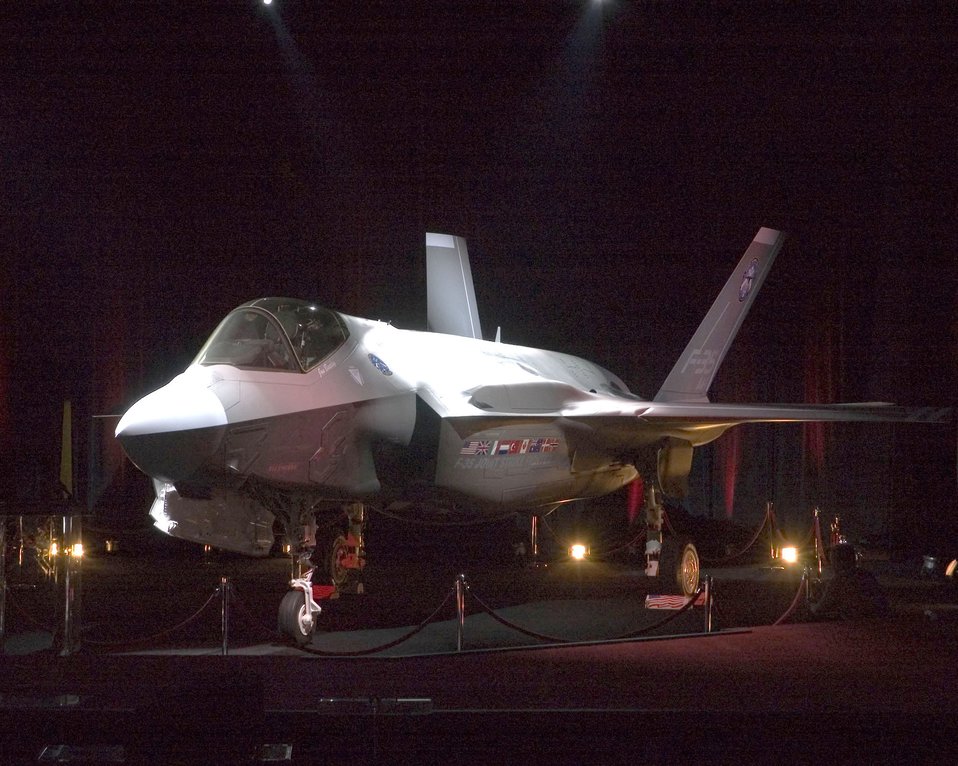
F-35 centerpiece for international partnership

The F-35 Lightning II is a 5th-generation, supersonic stealth fighter designed to replace a wide range of existing aircraft for the U.S. and eight partner nations. Brig. Gen. Charles R. Davis, deputy program executive officer for the F-35 Lightning II program office, expanded on the coalition-building benefits of the F-35 on Sept. 27 during his presentation at the Air Force Association's Air & Space Conference and Technology Exposition in Washington D.C.